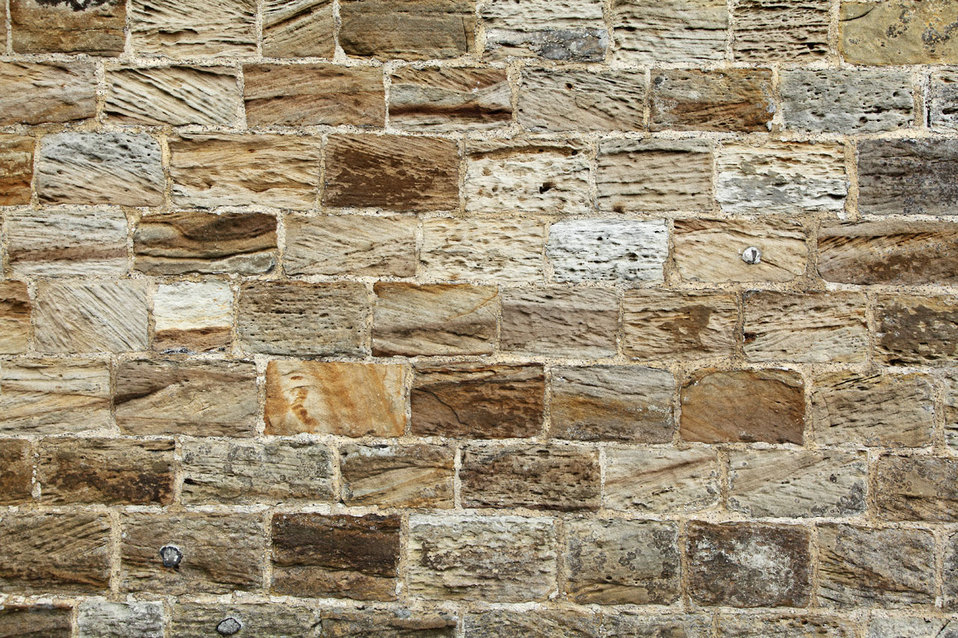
Sandstone brick wall texture.